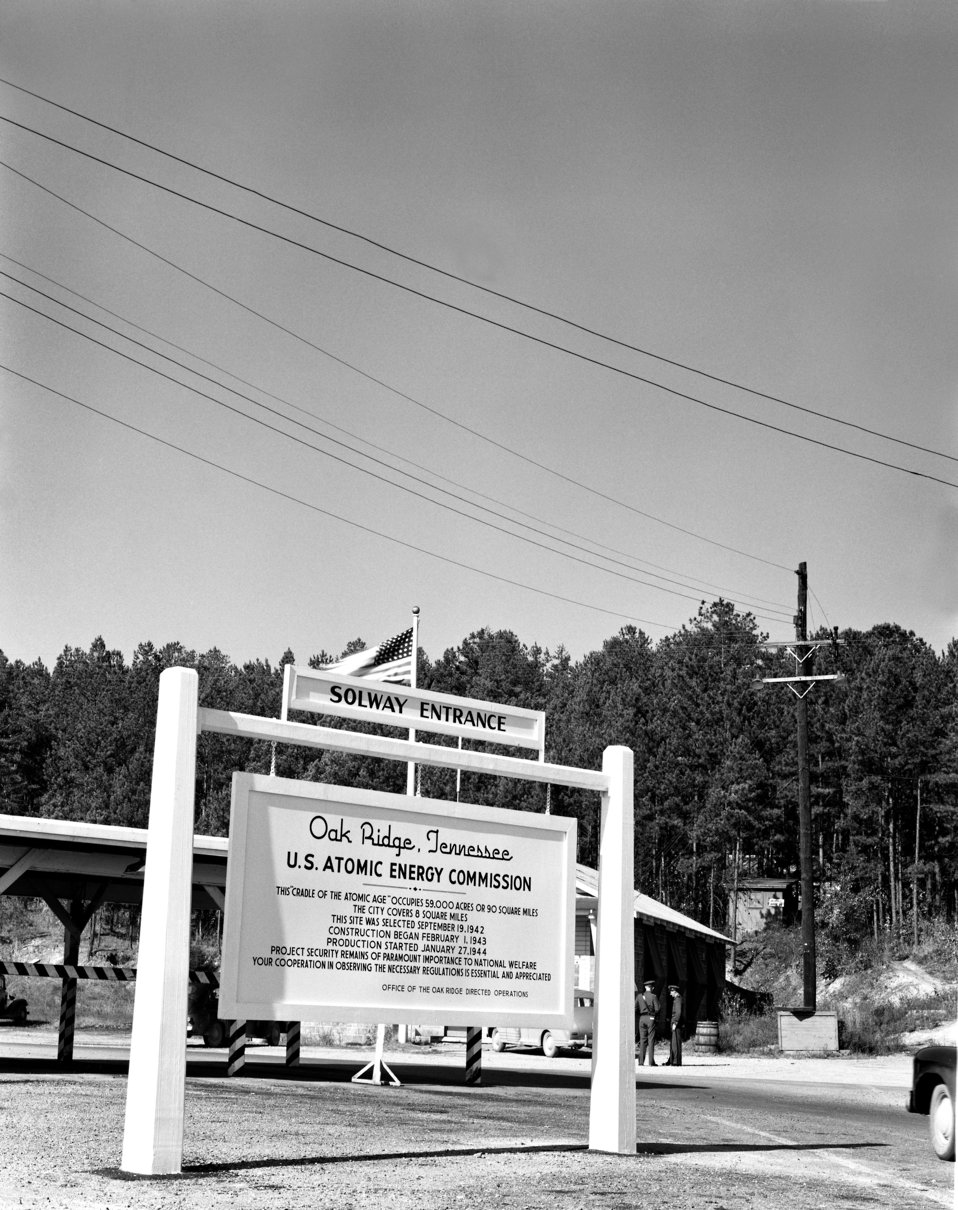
Solway Gate Sign Oak Ridge 1947

3918-2 DOE photo Ed Westcott 11-17-1947 Oak Ridge Tennessee